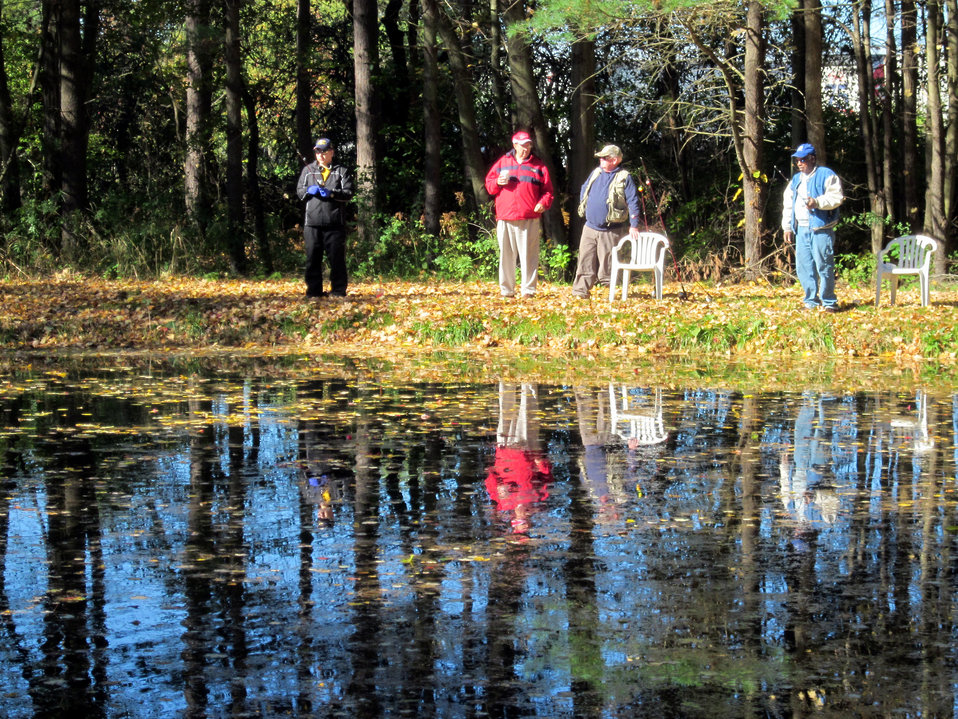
Fall fishing reflections

October 13, 2012, Sunderland, MA: Veterans and volunteers are reflected in a pond at the U.S. Fish and Wildlife Service's Richard Cronin National Salmon Station on a crisp fall day. Left to right, Kenny DeSalvo, George Murphy, Russ Merrill and Terry Henry.